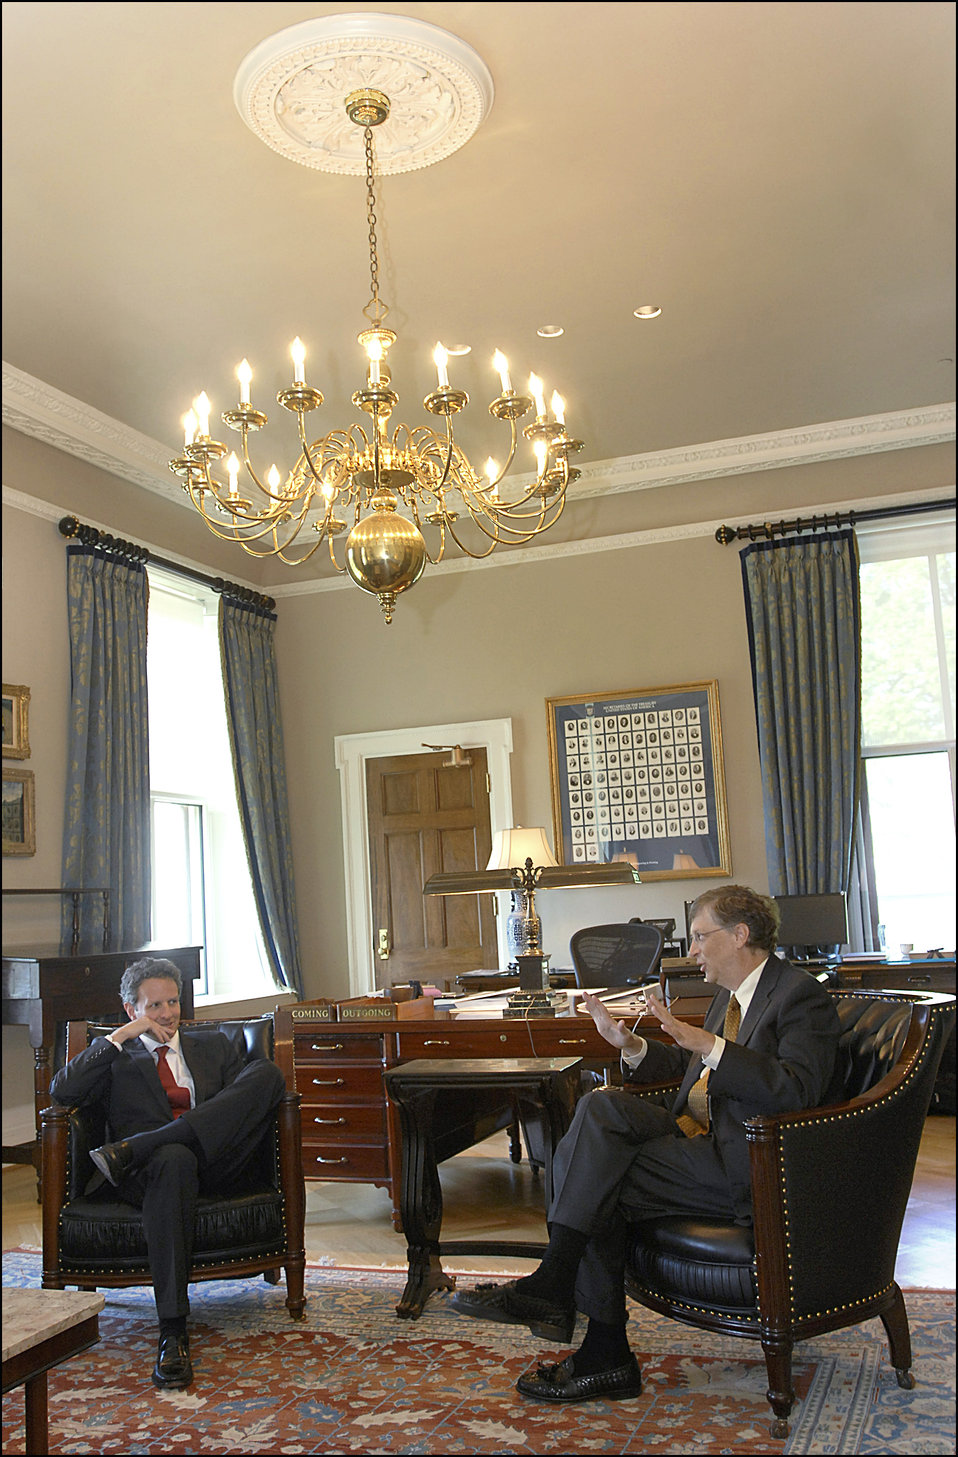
Announcement on International Commitment to Fight Global Hunger and Poverty, 4/22/10

Treasury Secretary Timothy Geithner and Bill Gates meet in the Secretary's office on April 22, 2010.